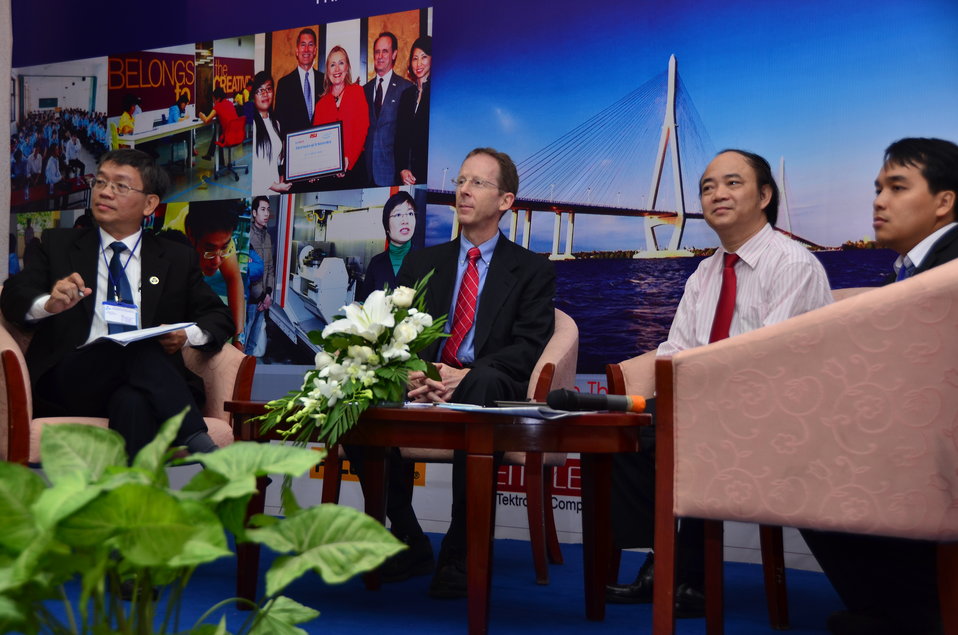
Panel discussion at the HEEAP Conference

March 19, 2013, Can Tho.